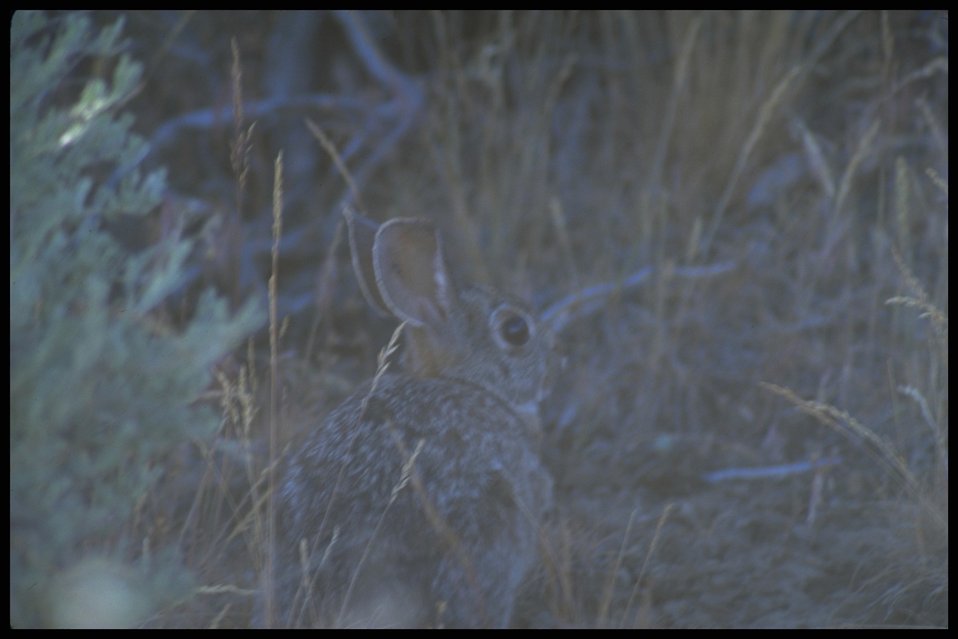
Cotton Tail rabbit, Lakeview District.